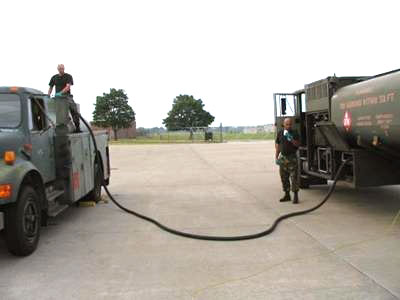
Technology office tests synthetic fuel in ground vehicles

An R-11 fueler at Selfridge Air National Guard Base, Mich., pumps synthetic S8 FT fuel into another vehicle that normally runs on JP-8 jet fuel. The Air Force Advanced Power Technology Office at Robins Air Force Base, Ga., is developing a synthetic fuel for use in ground vehicles.